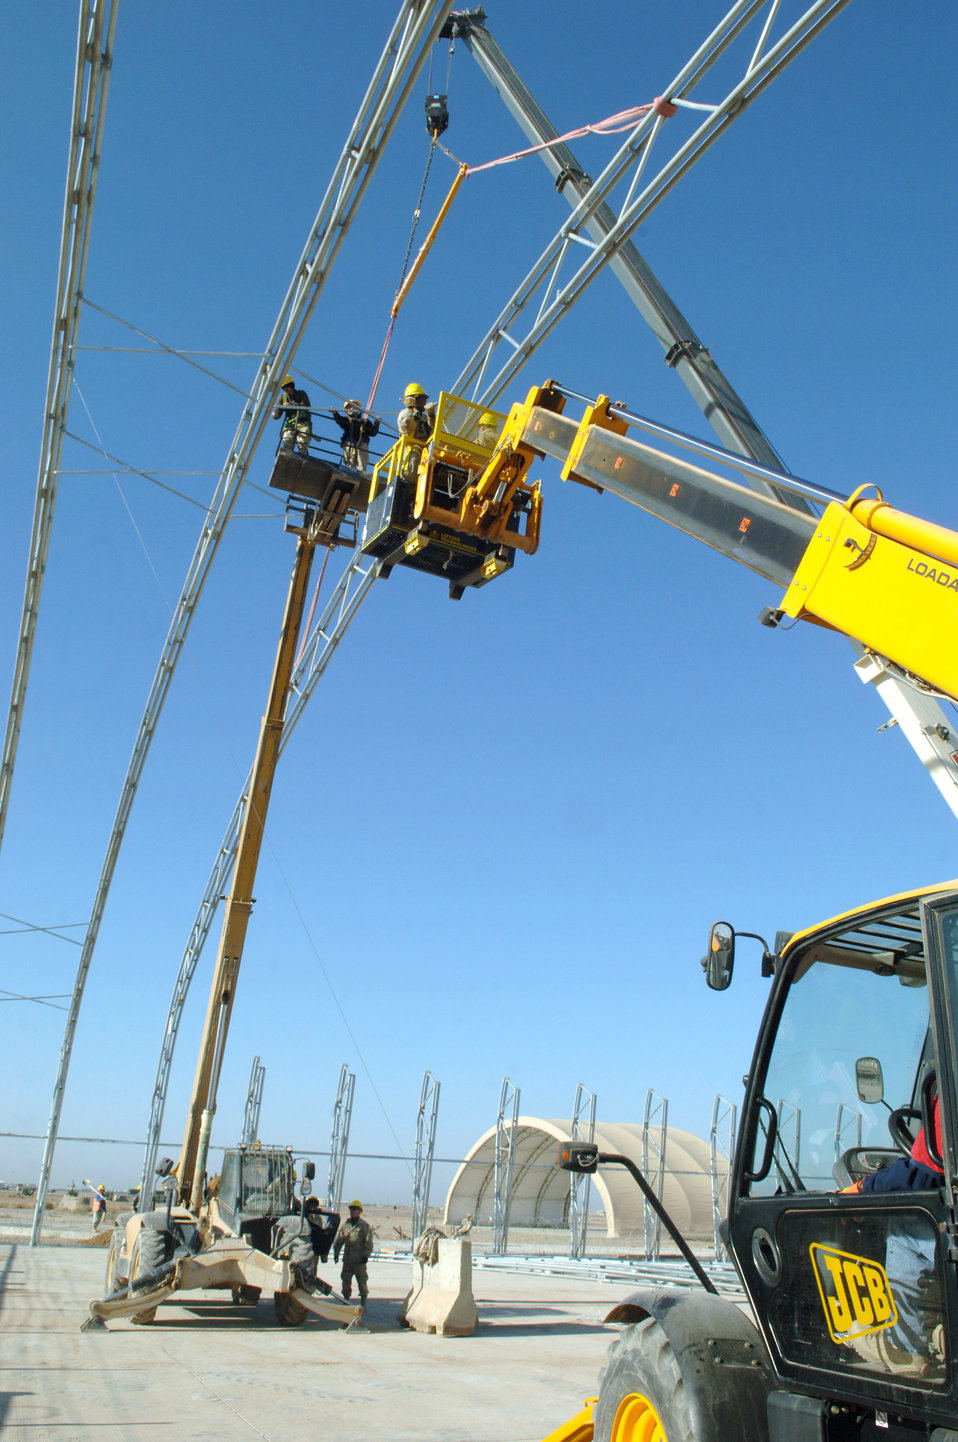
Shelter construction

Airmen from the 332nd Expeditionary Civil Engineer Squadron Structures shop postion an arch Nov. 26 to the new Hunter Unmanned Aerial Vehicle shelter. The 20-day project at Balad Air Base, Iraq., will take approximately 3,200 man hours to complete.